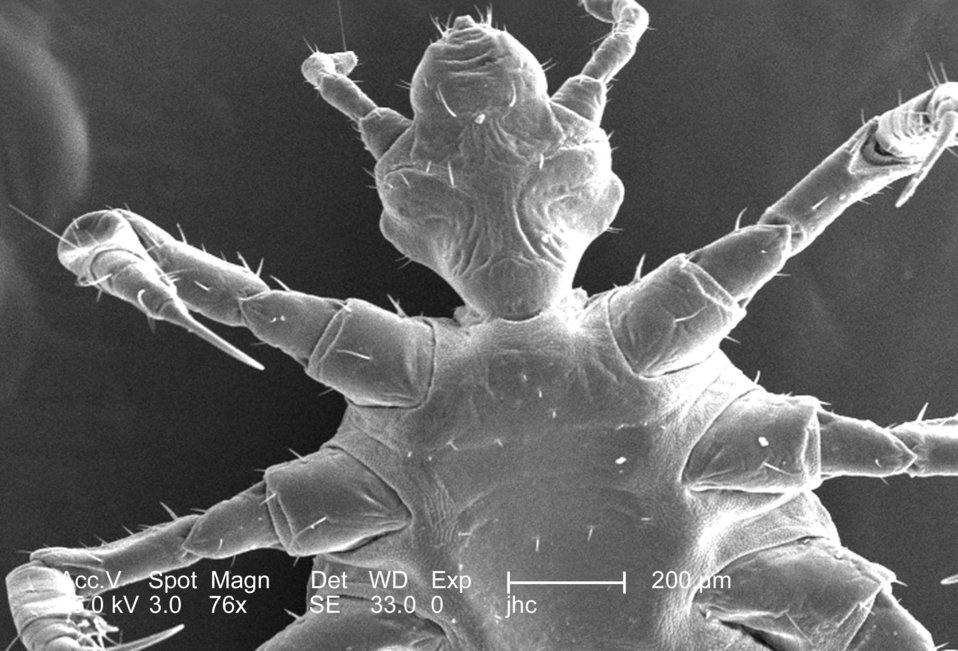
This was one of five scanning electron micrographic (SEM) images (PHIL# 9243 - 9247), successively magnified at higher and higher values, which focused on the head region of a female body louse, Pediculus humanus var. corporis from a ventral perspective. At a relatively low magnification, this SEM revealed some of the insect's exoskeletal morphology exhibited by its cephalic, or head region, thoracic, and proximal abdominal regions. Of interest is the jointed configuration of its six extremities, from which it derived its classification in the phylum of Athropoda, i.e., Arthro from "joint', and poda from "leg"). Also note the sensorial 'hairs' known as 'setae, which really aren't hairs at all, but chitinous exoskeletal extensions, unlike mammalian hairs, which are made up of keratin, and make mammals unique in this regard.